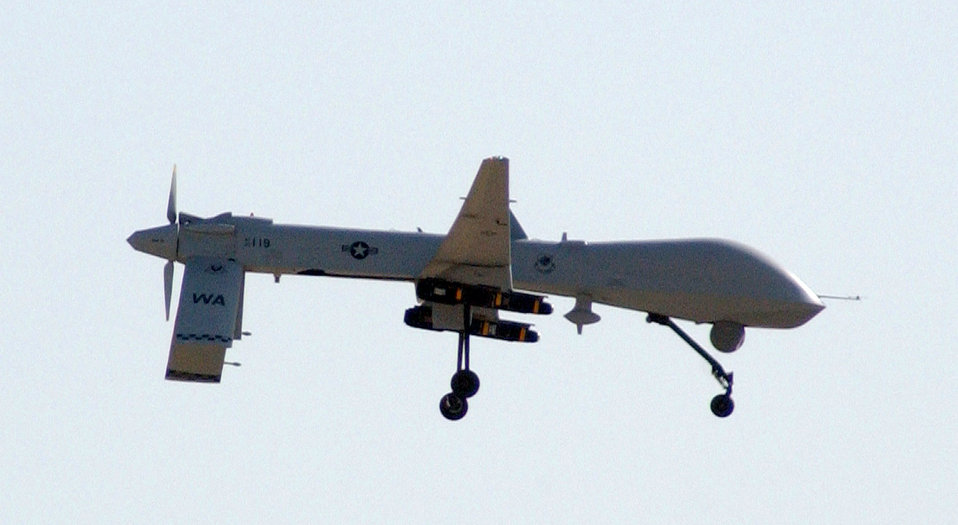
Second Predator crashes in Iraq in two days

An MQ-1 Predator, like this one preparing to land at Balad Air Base, Iraq, crashed near the base July 30. It is the second Predator crash in two days. Hostile action did not appear to be a factor in either crash.